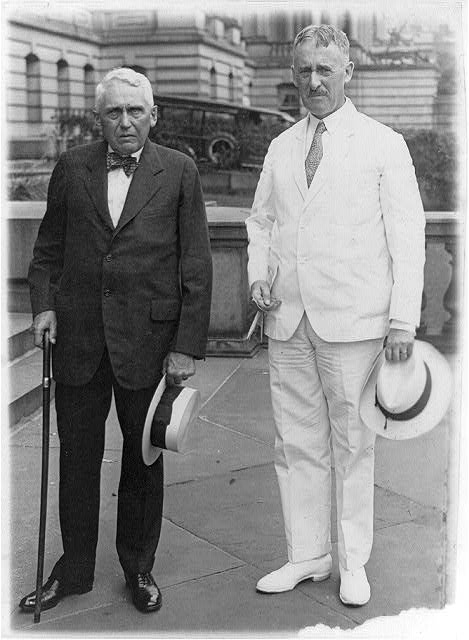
Henry Stimson and Frank Kellogg

Secretary of State Henry L. Stimson (right) and former Secretary Frank B. Kellogg (left) leaving the State Department. 7/25/29